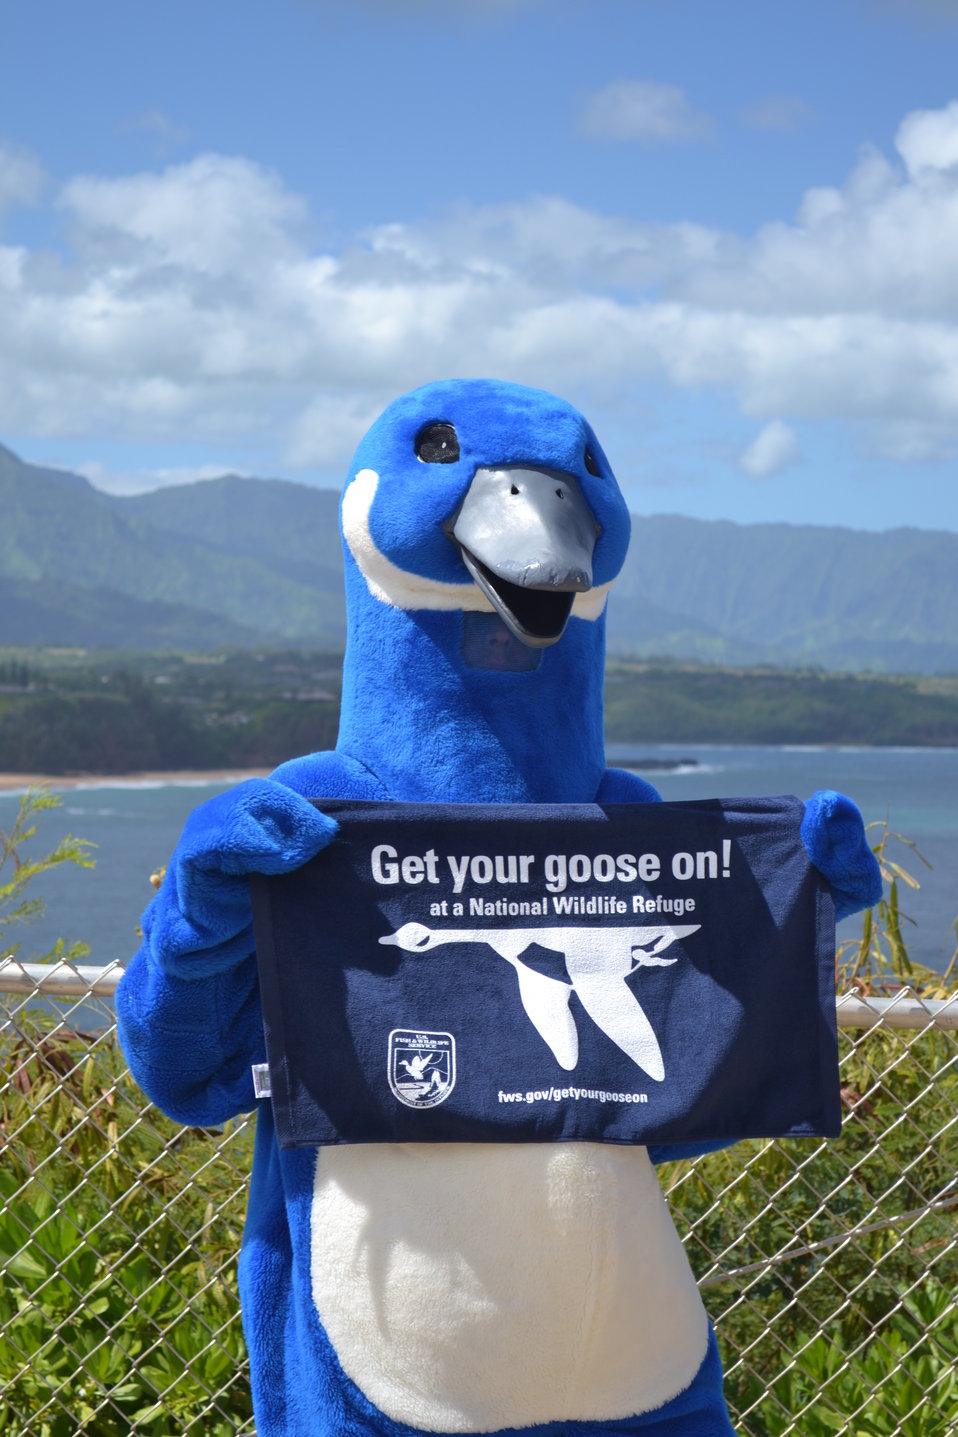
Puddles the Blue Goose

Taken at Kilauea Point National Wildlife Refuge in Kilauea, HI.